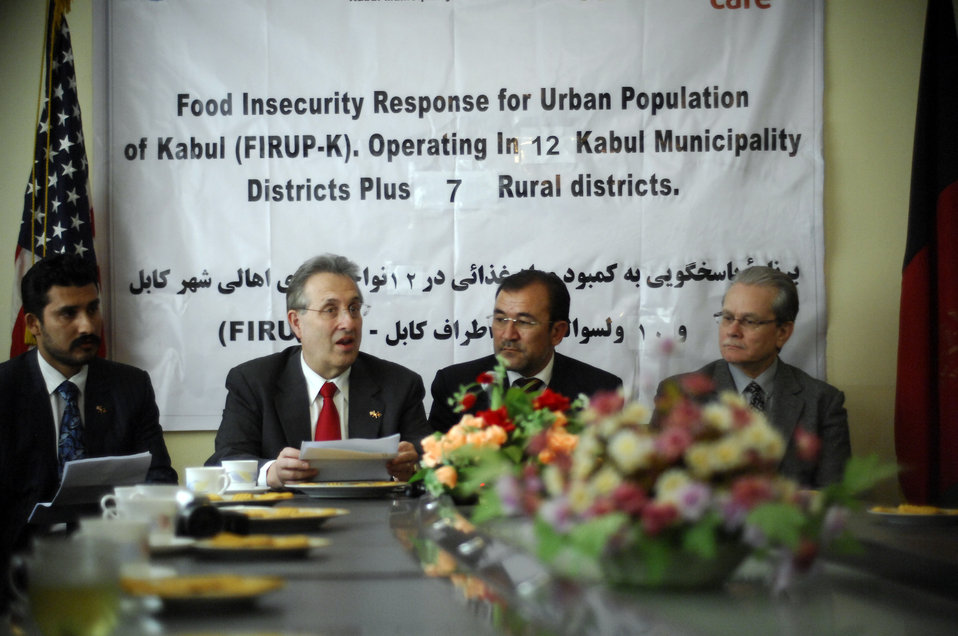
Care91 (1)